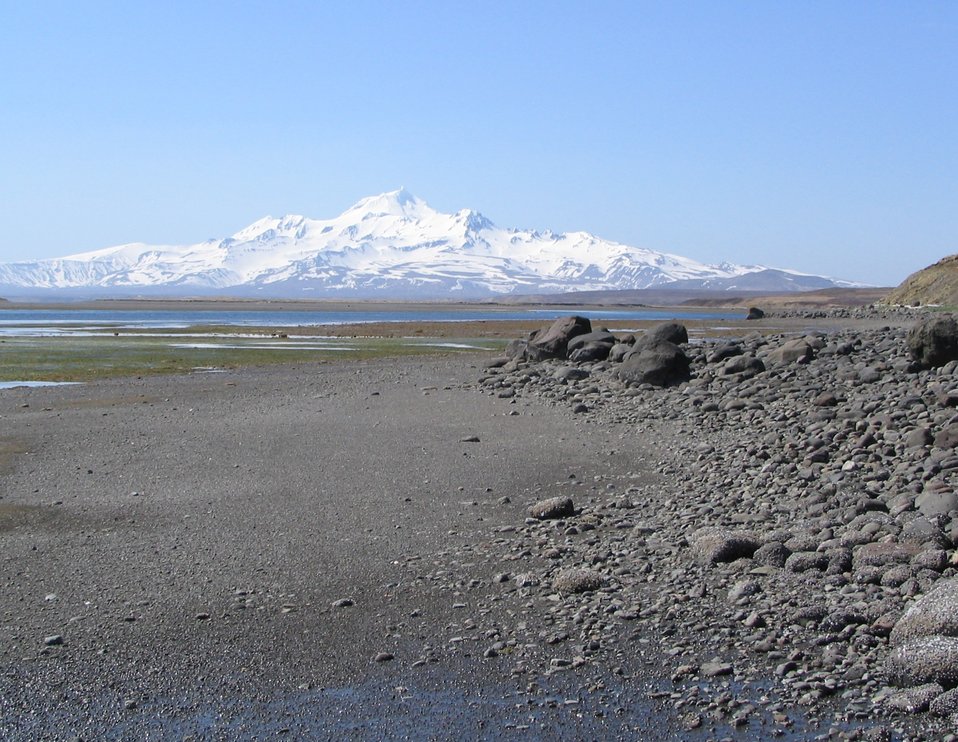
View of Frosty Peak

Kinzarof Lagoon, Izembek National Wildlife Refuge